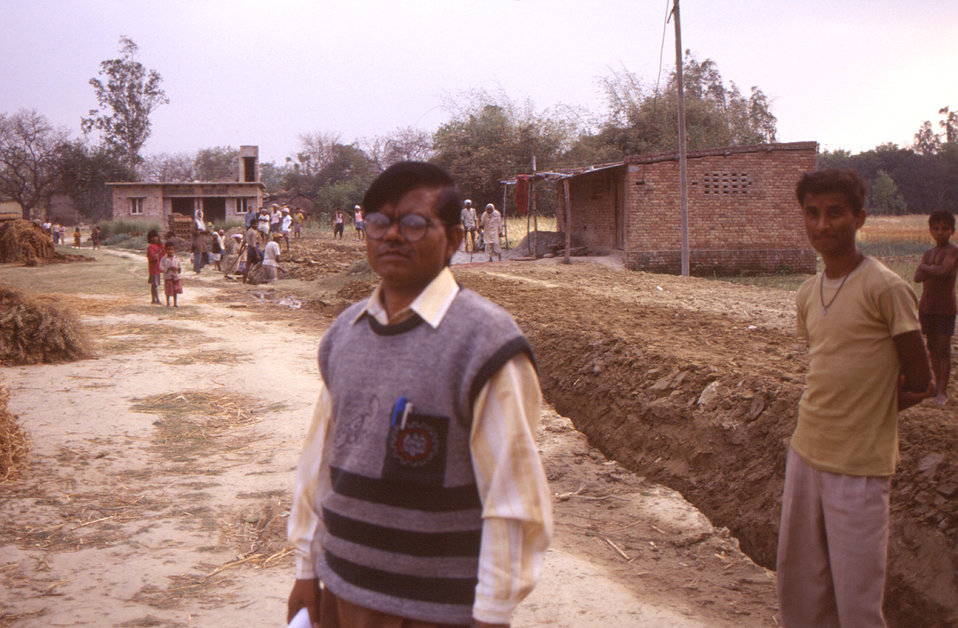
Revealed in this 2000 photograph was one of the many rural area roads, which as you can see, is very narrow, and sometimes too narrow to allow for the passage of motorized transport vehicles such as cars and trucks. In order to investigate cases of acute flaccid paralysis (AFP), one had to travel by foot from house to house. Here, in the Deoria District of India, one of the Immunization Officers was on his way to investigate a suspected AFP case. Since its inception in the fall of 1998, the STOP Transmission of Polio (STOP) immunization initiative teams have worked in over 50 countries. In the first years of the program, most STOP team members worked primarily to bolster acute flaccid paralysis (AFP) surveillance, support 'national immunization' days (NID), and conduct polio case investigation and follow-up. STOP team members are recruited and trained primarily by CDC, however, once on assignment, they are under the supervision of either WHO or UNICEF.